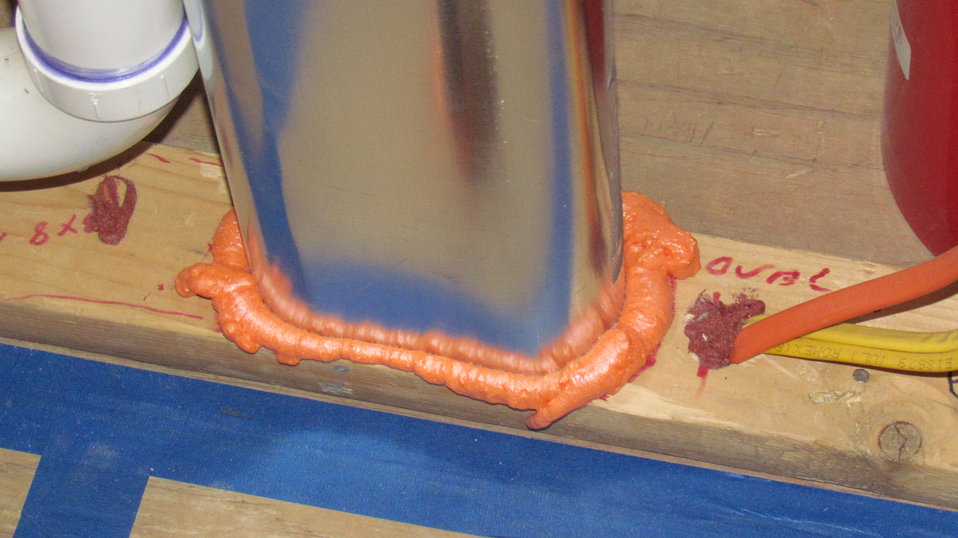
Photo showing foam sealant that was applied around ducts, electrical wiring, and plumbing penetrations to prevent the unwanted flow of air between spaces within the facility.